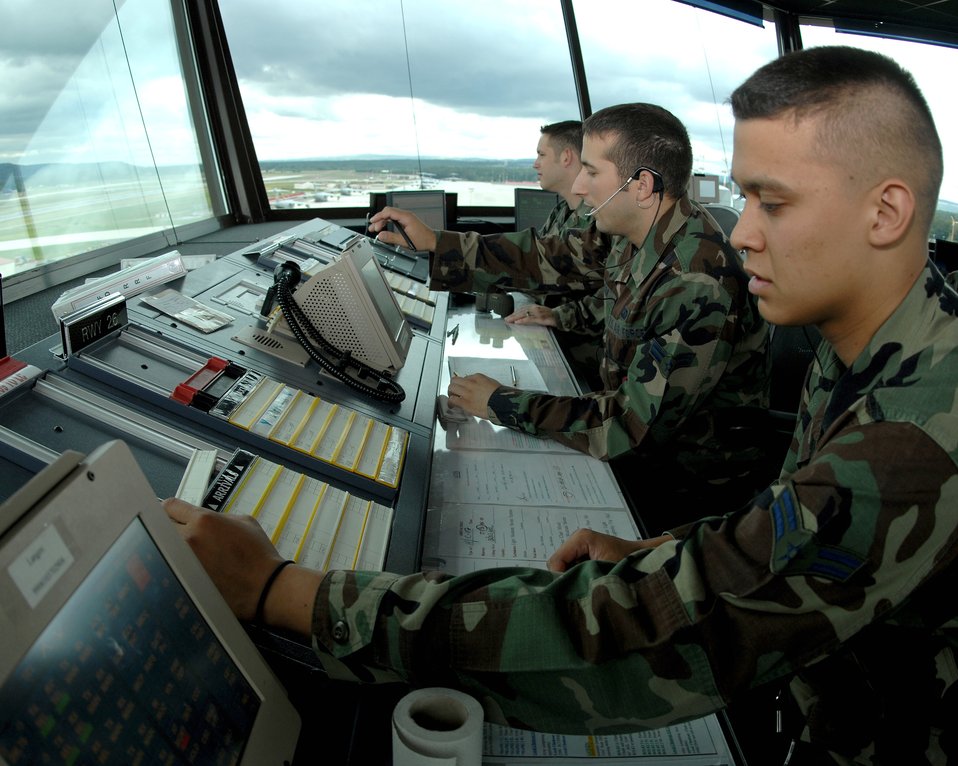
Guidance from above

Senior Airman Robert Pupilis (left to right), Airman 1st Class Toby Jacob and Airman 1st Class Earl Pruett work to ensure all inbound and outbound aircraft arrive and depart safely June 26 from the control tower at Ramstein Air Base, Germany. The Airmen are assigned to the 86th Operations Support Squadron.